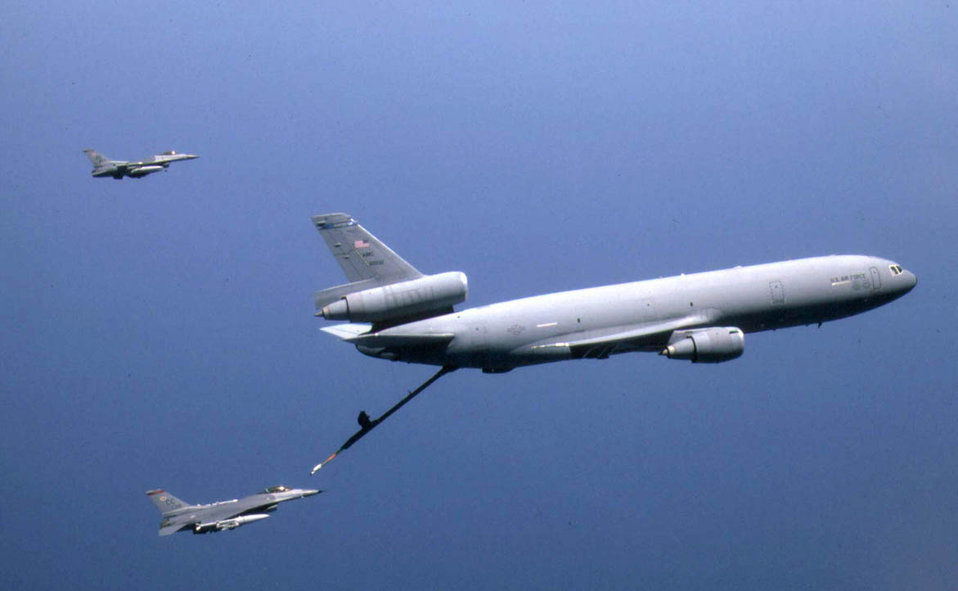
Refueling Falcons

FILE PHOTO -- The KC-10A Extender is an Air Mobility Command advanced tanker and cargo aircraft designed to provide increased global mobility for U.S. armed forces.